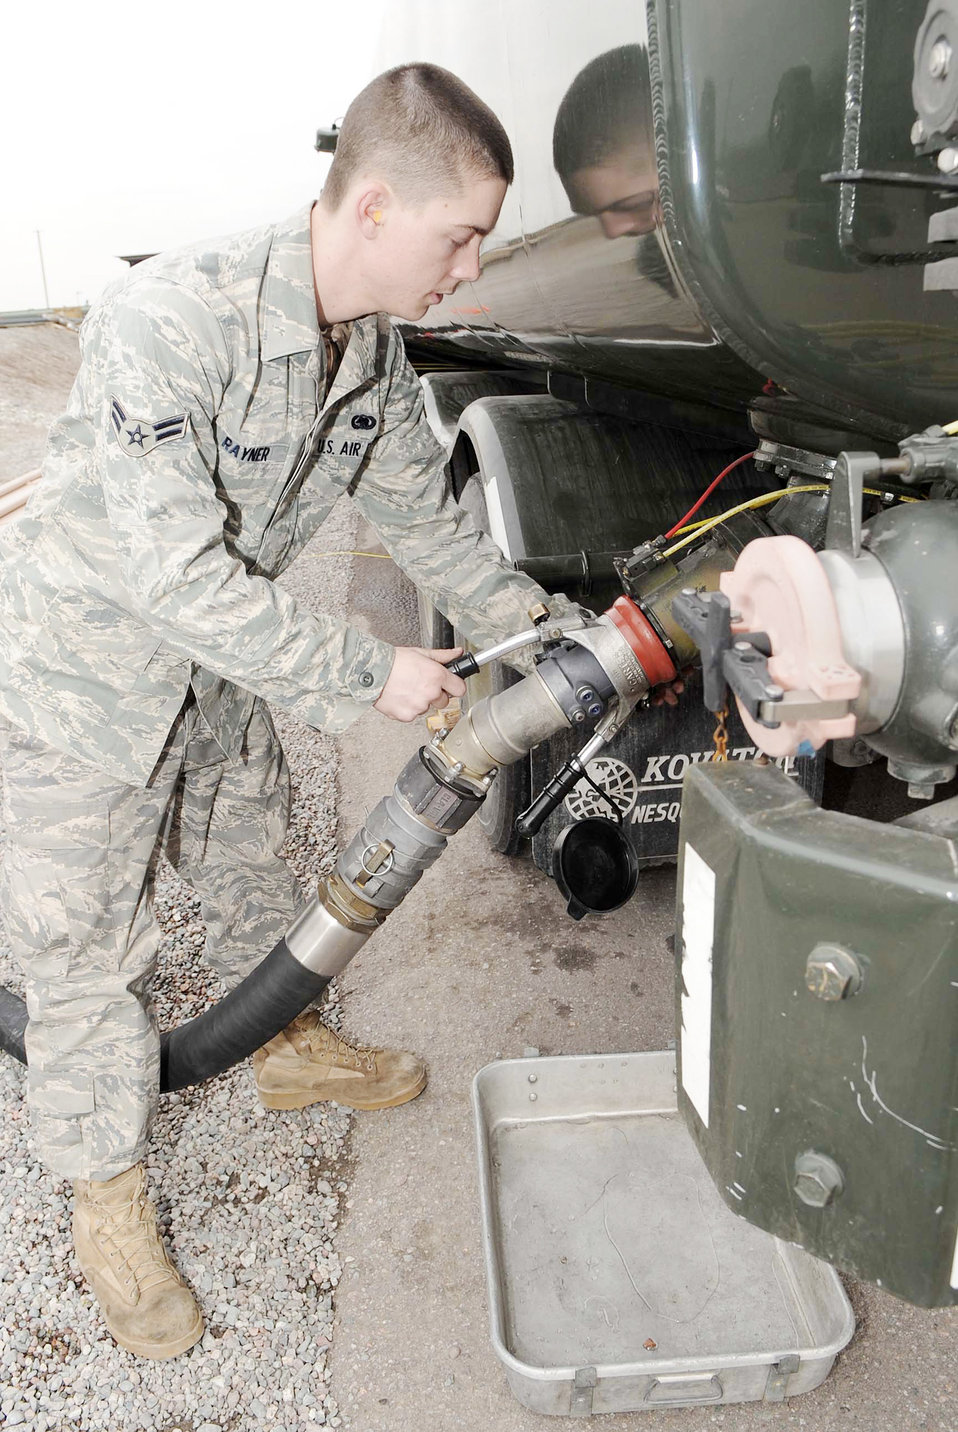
Pumping gas makes a difference

Airman 1st Class Jason Rayner pumps fuel into a petroleum, oil and lubricants fuel truck Feb. 26, 2010, at the Transit Center at Manas, Kyrgyzstan. Airman Rayner is a fuels journeyman assigned to the 376th Expeditionary Logistics Readiness Squadron.